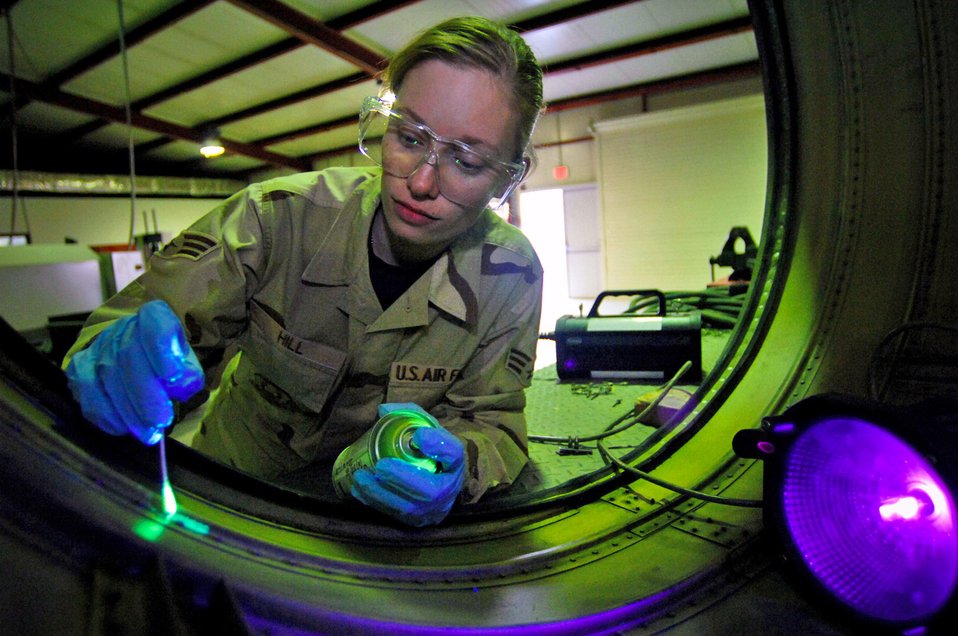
Keep on shining

To find cracks, Senior Airman Rebeca Hill paints fluorescent fluid on the engine exhaust cover of an F-16 Fighting Falcon Feb. 21 at Balad Air Base, Iraq. She is deployed from Hill Air Force Base, Utah.